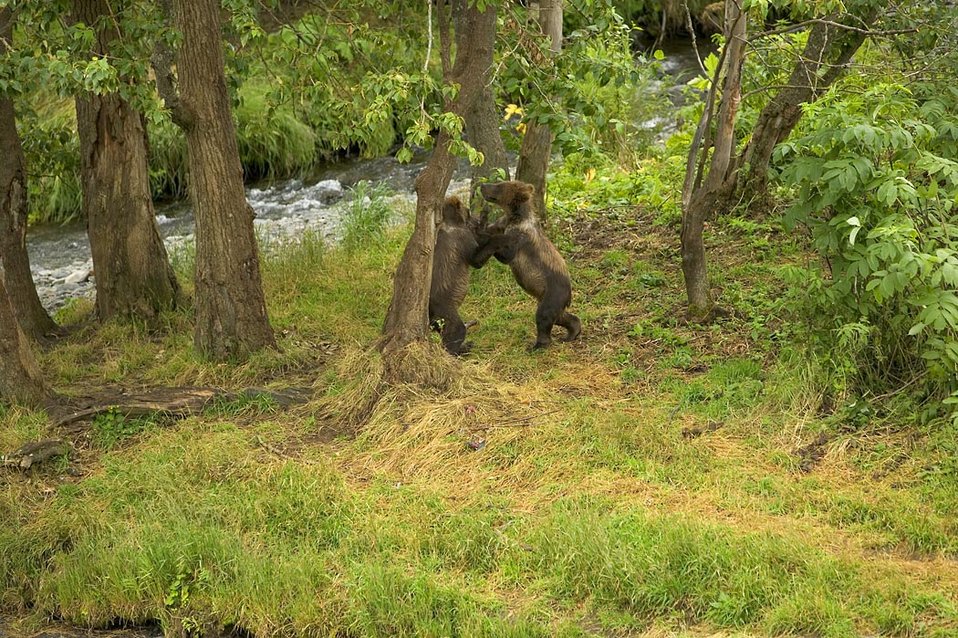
Brown bear cubs wrestling in the woods

Grizzly bear cubs in the woods near a river playing and wrestling on their hind legs.